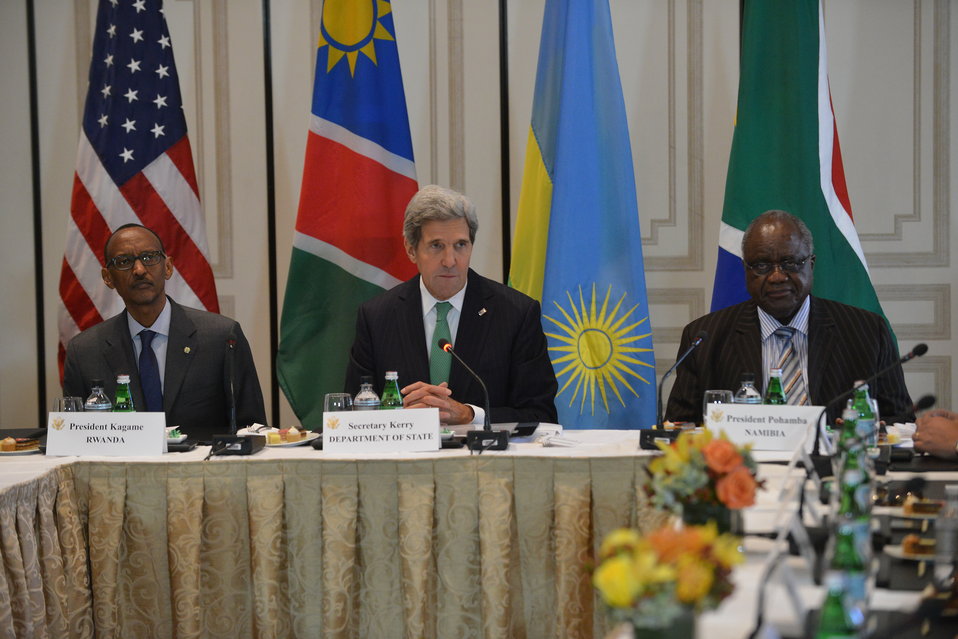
Secretary Kerry Hosts a High-Level Meeting With PEPFAR Partners

U.S. Secretary of State John Kerry hosts a High-Level Meeting with PEPFAR Partners in New York City on September 25, 2013.